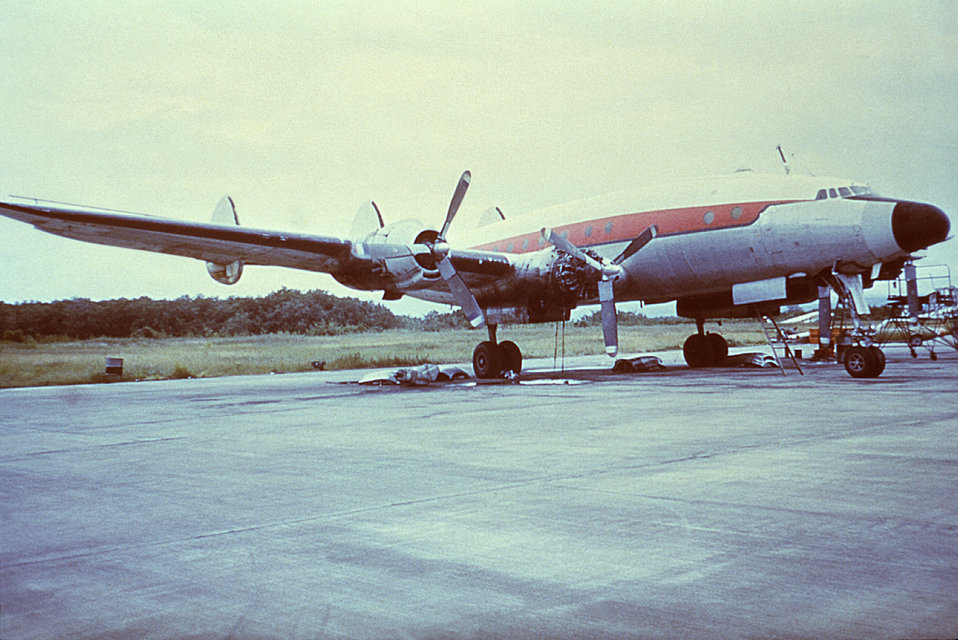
This 1978 photograph depicts a Lockheed C-121D 'Super Constellation' aircraft used in the dispersal of ultra-low volume (ULV) Malathion insecticidal fog in order to control populations of potential insect disease vectors.